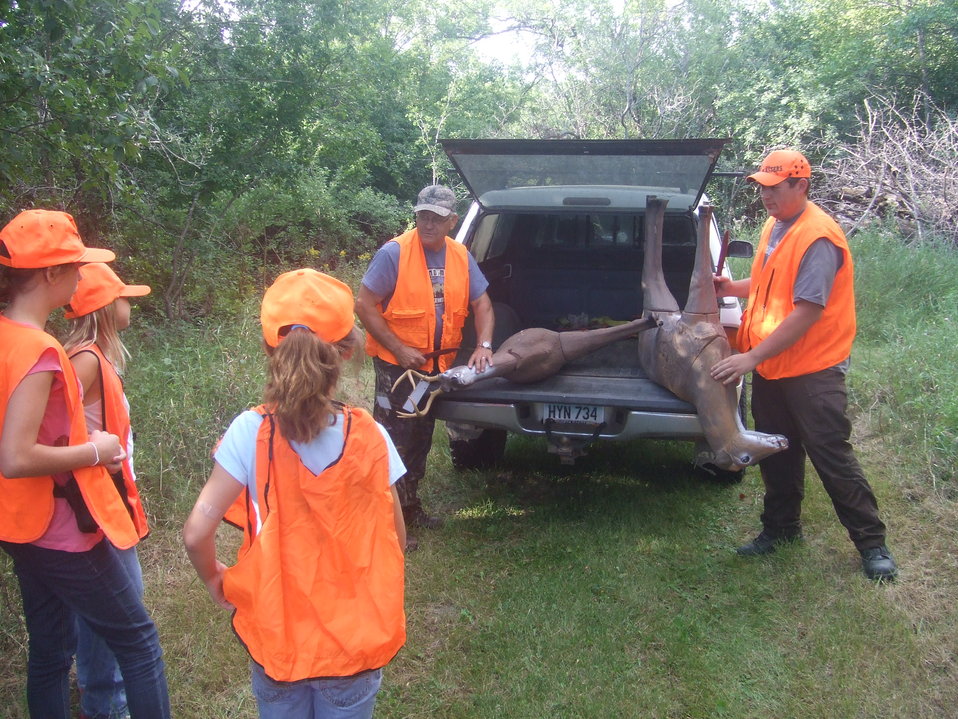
2011 Greenwing Day - Game Warden scenario session

Des Lacs National Wildlife Refuge, Tasker's Coulee